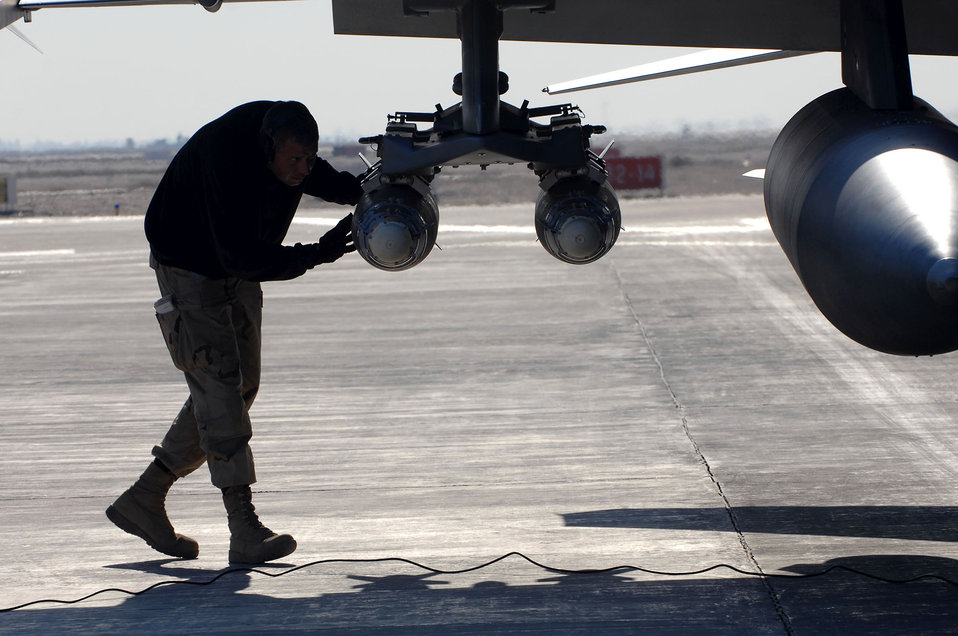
Airmen are 'bombarded'

Staff Sgt. Chadwick Carter disarms a guided bomb unit on an F-16 Fighting Falcon Jan. 19 at Balad Air Base, Iraq. Aircraft munitions are disarmed after landing to ensure the safety of ground personnel. Sergeant Carter is a 332nd Aircraft Maintenance Unit weapons loader deployed from Spangdahlem Air Base, Germany.